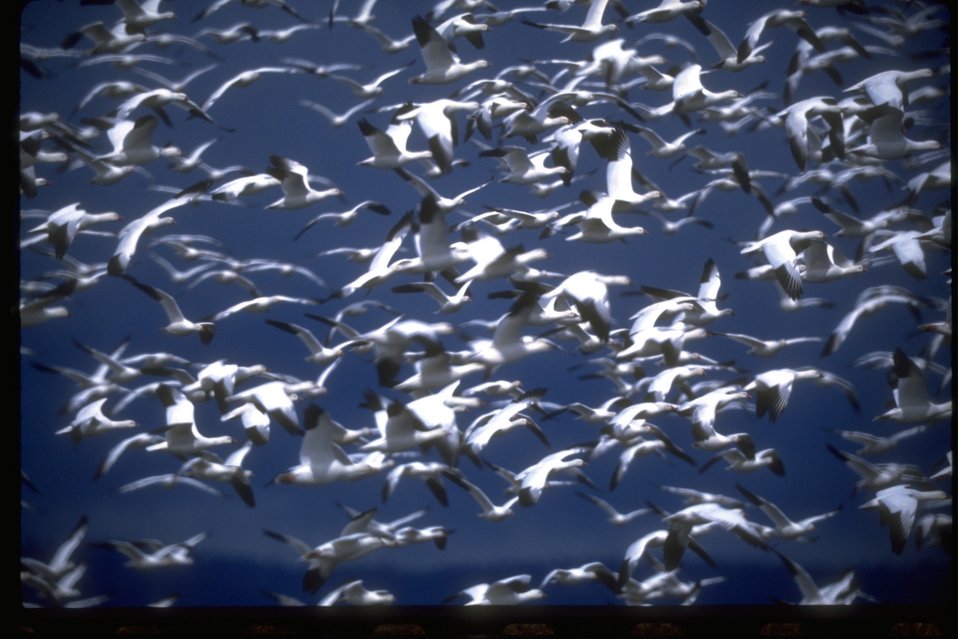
Snow Geese (Chen hyperborea) south of Burns.